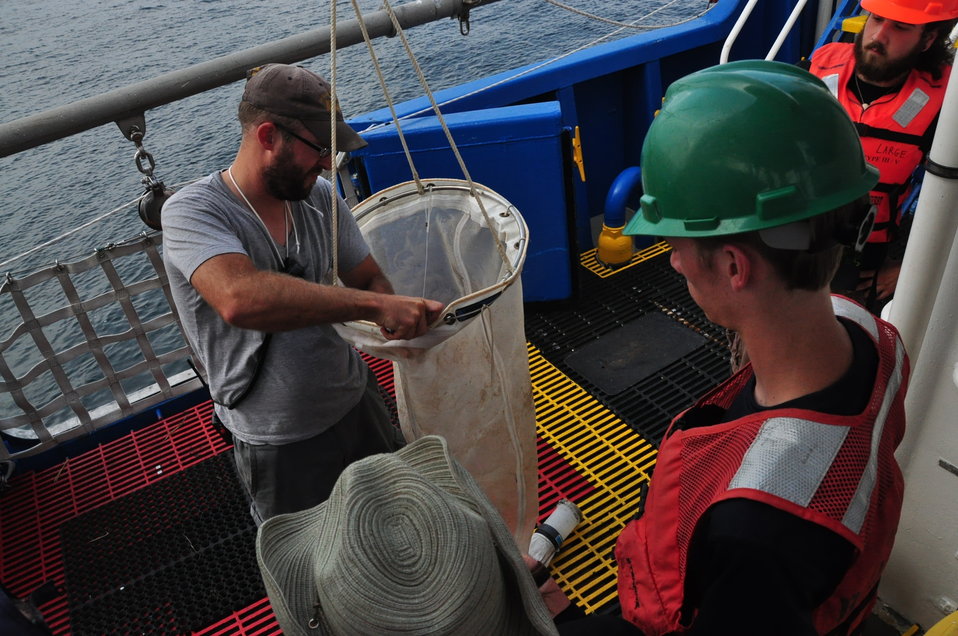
August 6, 2011 Preparing the plankton net